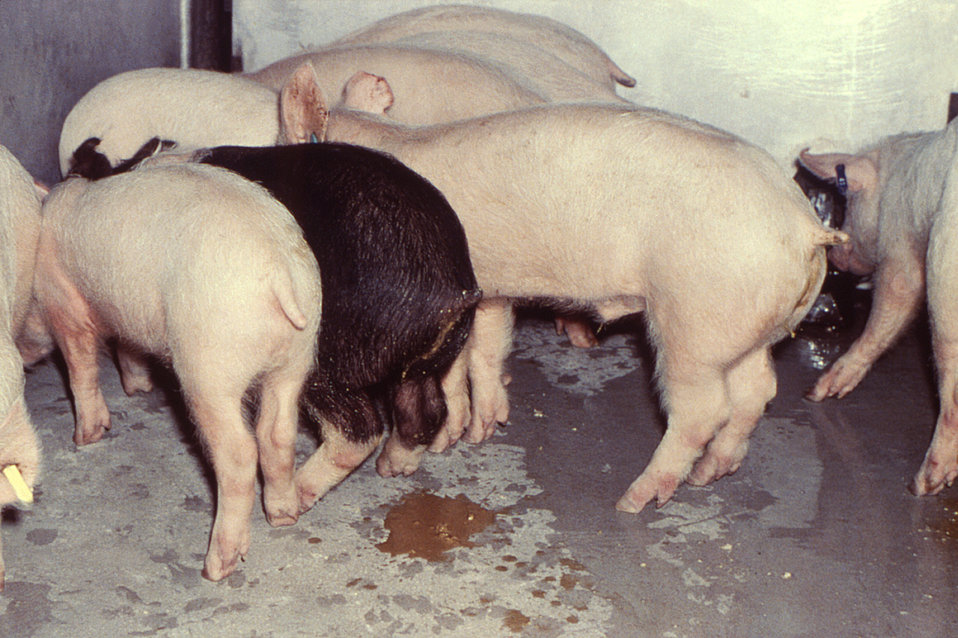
From the 'Illustrated Manual for the Recognition and Diagnosis of Certain Animal Diseases', published in 1982, by the Mexico-United States Commission for the Prevention of Foot and Mouth Disease, this photograph depicts a group of domesticated pigs, one of whom showed signs of diarrhea, which is one of the symptoms of hog cholera (HC).